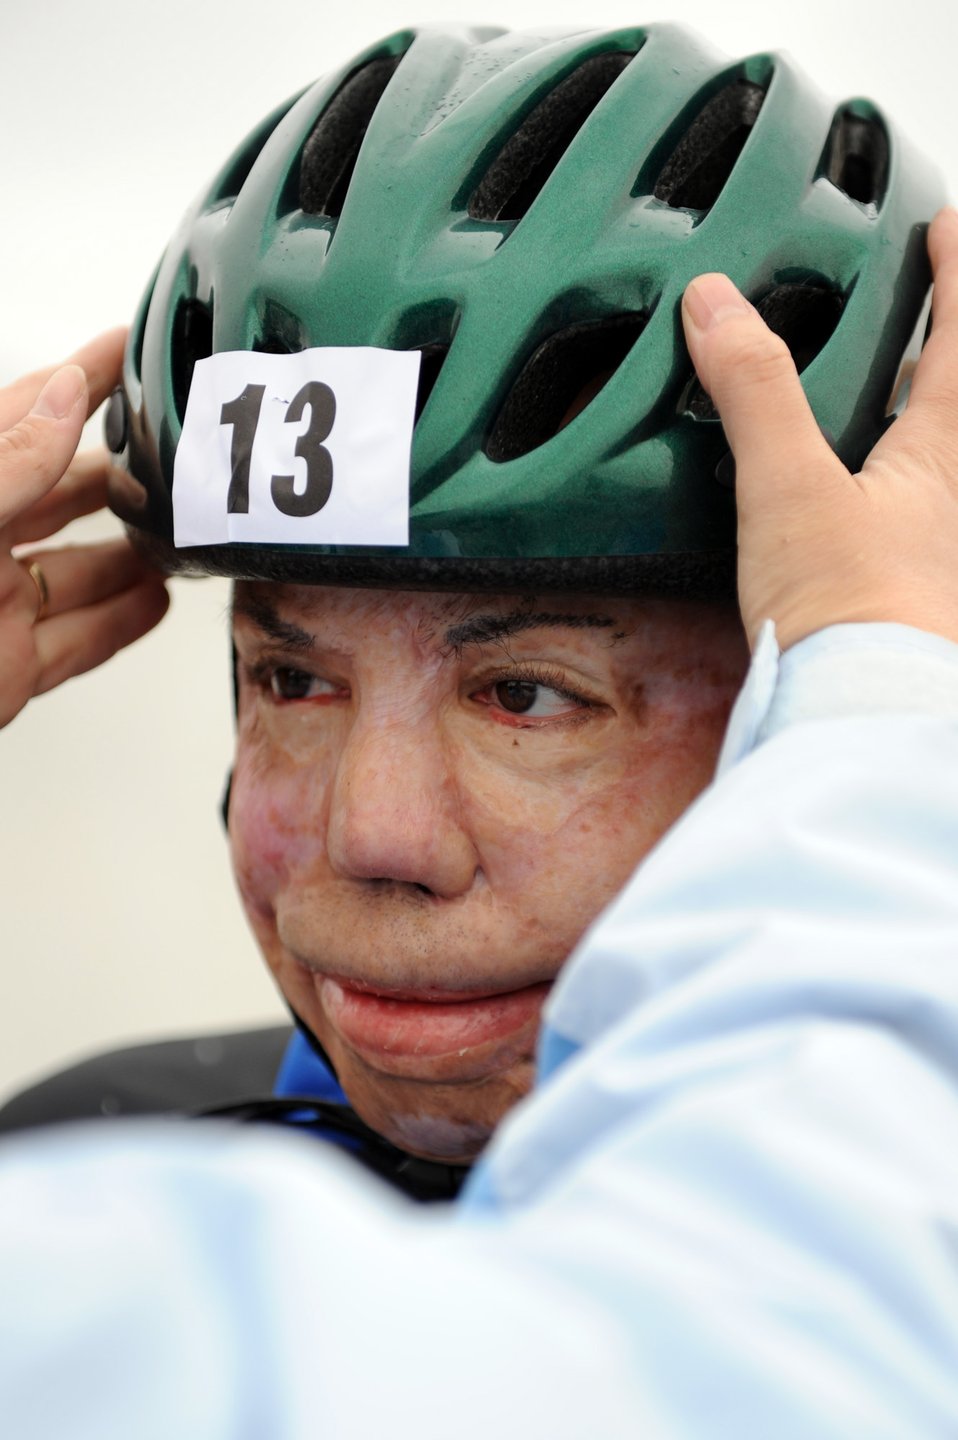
Warrior Games AF Cycling

Tech. Sgt. Israel Del Toro is assisted with his helmet before competing in the 10-kilometer recumbent bike race for the inaugural Warrior Games May 13, 2010, at the U.S. Air Force Academy in Colorado Springs, Colo. Sergeant Del Toro is one of some 200 disabled veterans participating in the Paralympic-style competition May 10 through 14.